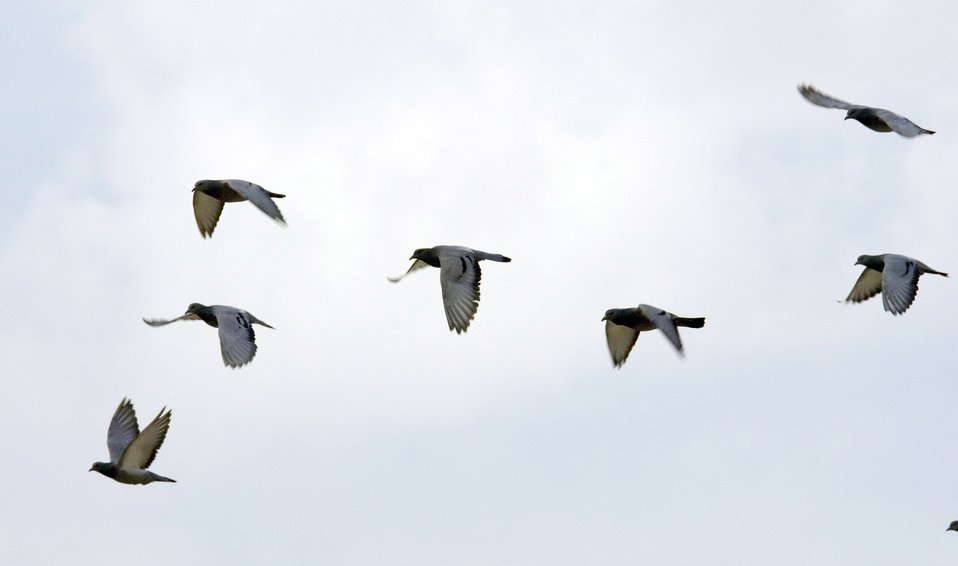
Protecting the flightline

BALAD AIR BASE, Iraq (AFPN) -- A flock of birds flies near the flightline here. With ponds on base and the Euphrates River near, birds are a common occurrence. Bird strikes can stop a mission, or even worse, take a human life.